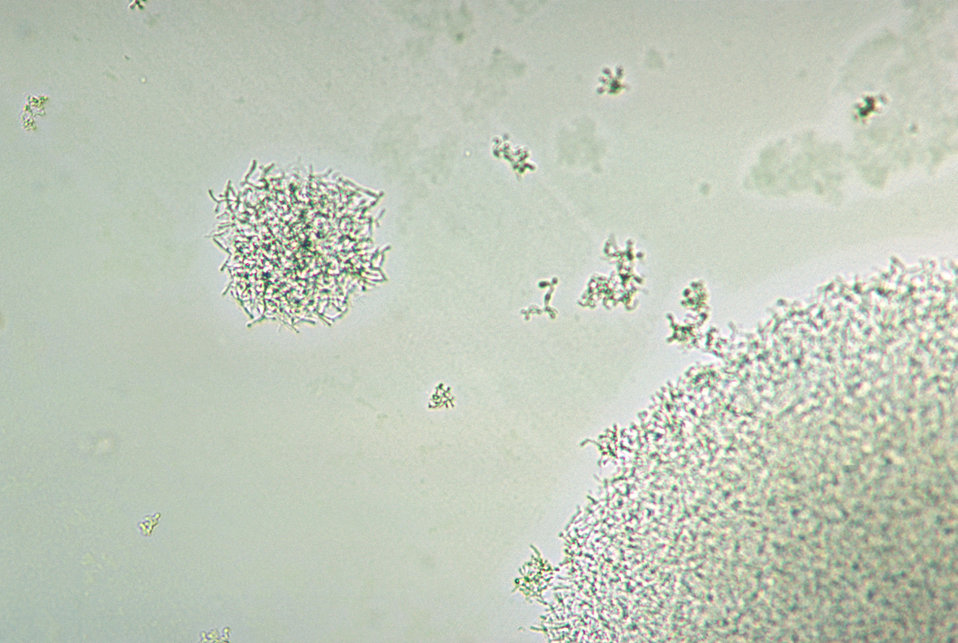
This photomicrograph depicts Corynebacterium matruchotii colonies cultured in BHIA by day 3.